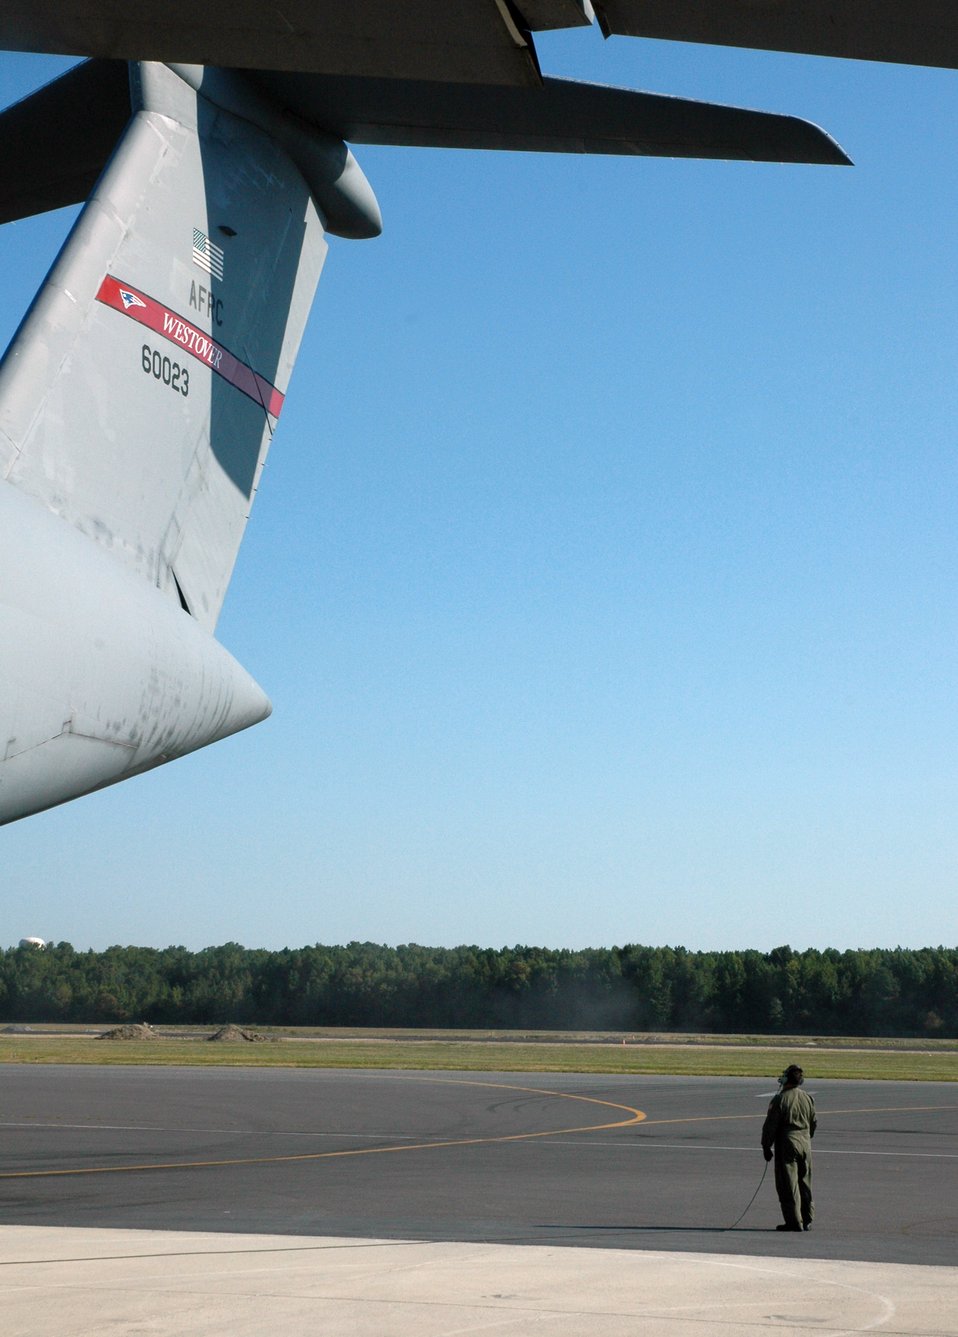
Reservists oversee Dover C-5 Avionics Modernization Program

Tech. Sgt. Eric Staniland observes the C-5 Galaxy elevator, which controls the up and down movement of the aircraft, as part of a preflight check. The C-5 Galaxy from Westover Air Reserve Base, Mass., received a modernized glass cockpit and avionics upgrade through the Avionics Modernization Program. Airmen from Dover Air Force Base, Del., and Travis AFB, Calif., are overseeing the AMP modifications of all the Air Force Reserve Command C-5s and will manage the rest of the C-5 fleet's conversion through 2015. Sergeant Staniland is a 709th Airlift Squadron flight engineer and a member of the 512th Acceptance Check Flight.